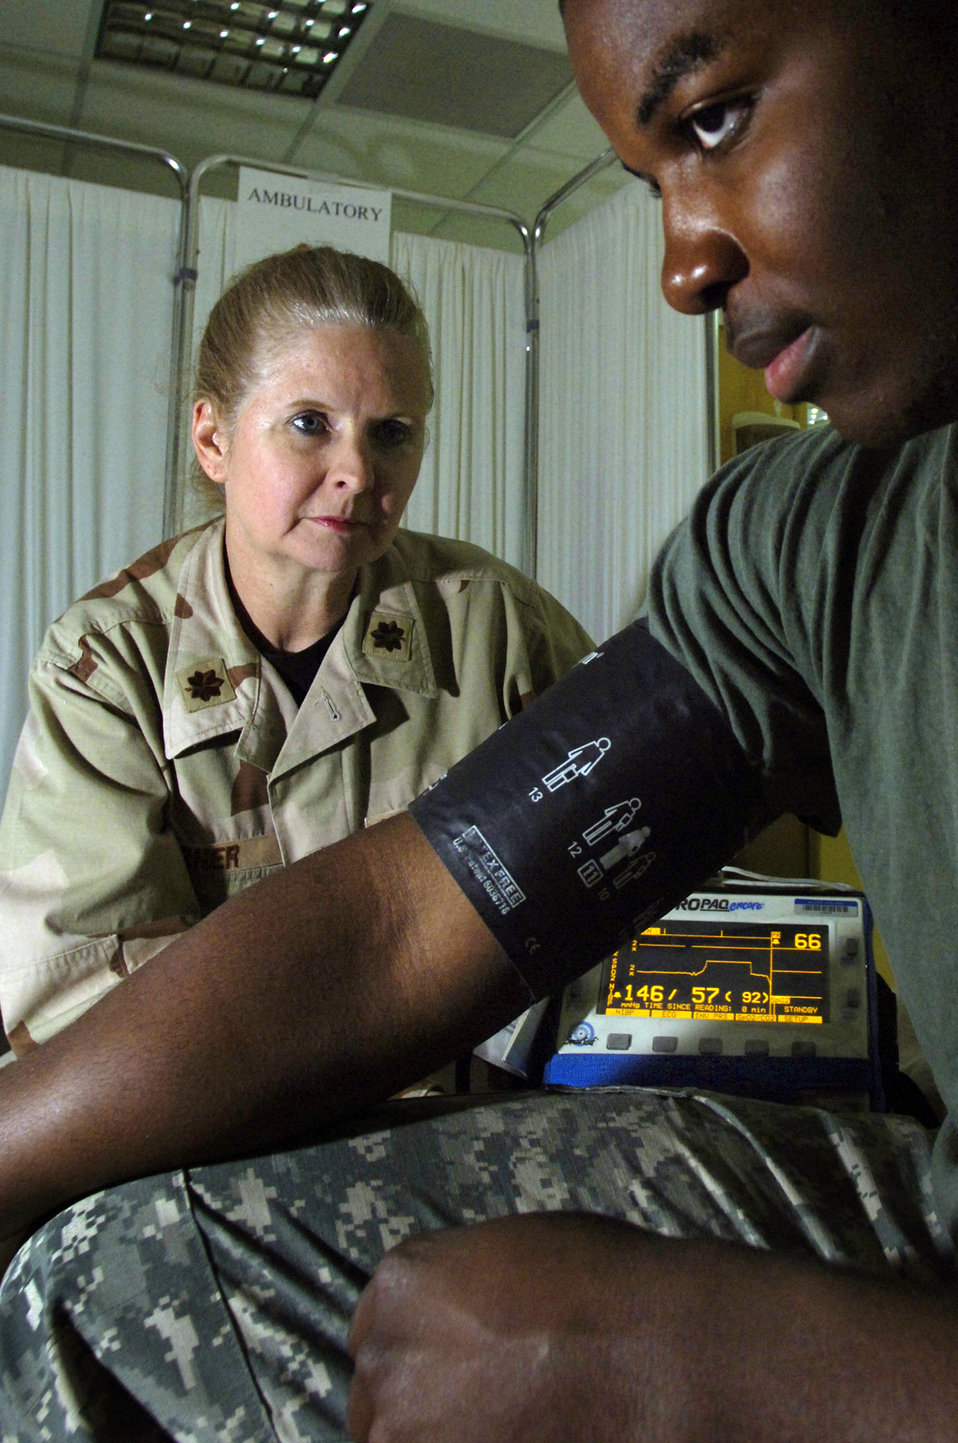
Reserve Airmen contributing to medical mission in Iraq

Major Laurie Turner takes Pfc. David Kendrick's blood pressure reading at Balad Air Base, Iraq. Major Turner is deployed from the 920th Aeromedical Staging Squadron at Patrick Air Force Base, Fla. Private Kendrick is deployed to Iraq from Fort Carson, Colo.